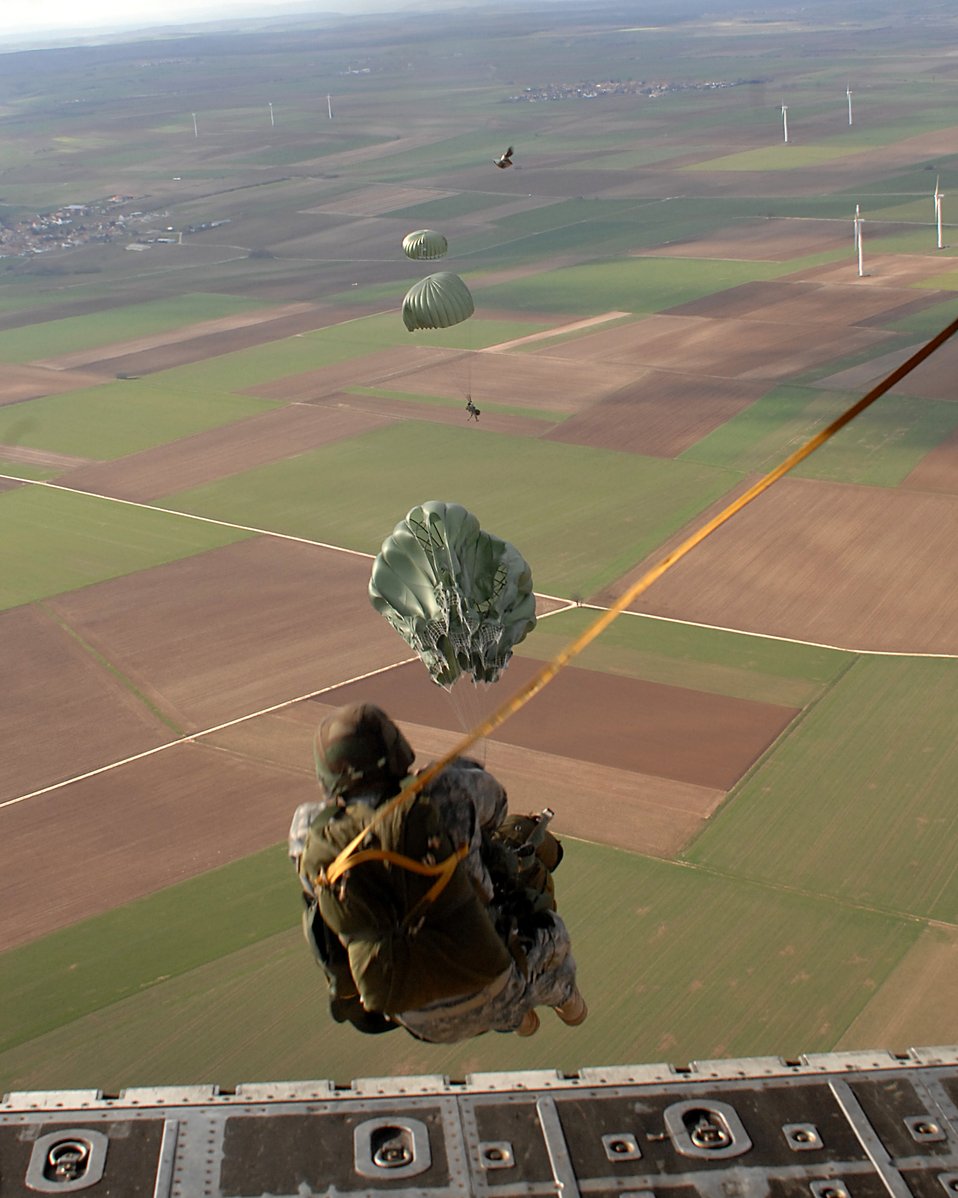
Airborne over Deutschland

Airmen from the 786th Security Forces Ravens at Sembach Annex, Germany, and Soldiers from the 5th Quartermaster Arial Delivery Detachment execute an airborne jump March 7 over southwestern Germany.